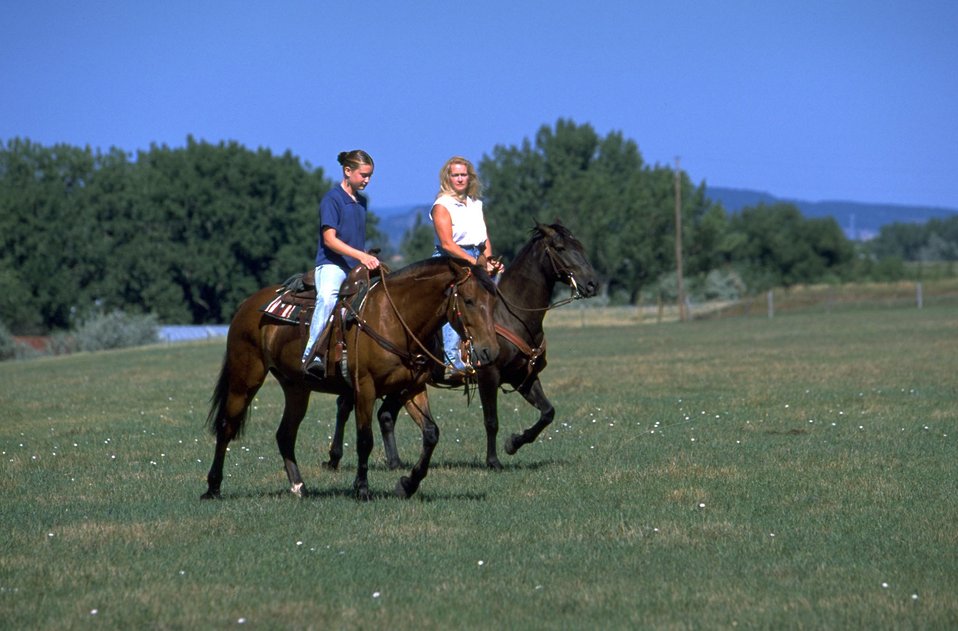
Trail Riding adopted Horses